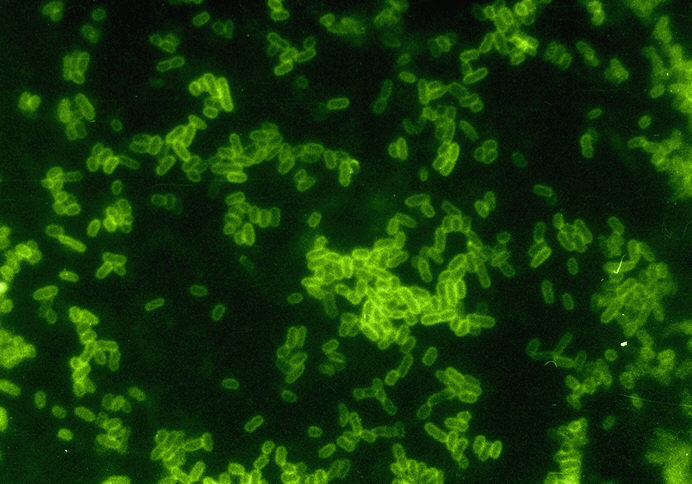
Escherichia coli in spinal fluid. FA stain (digitally colorized).